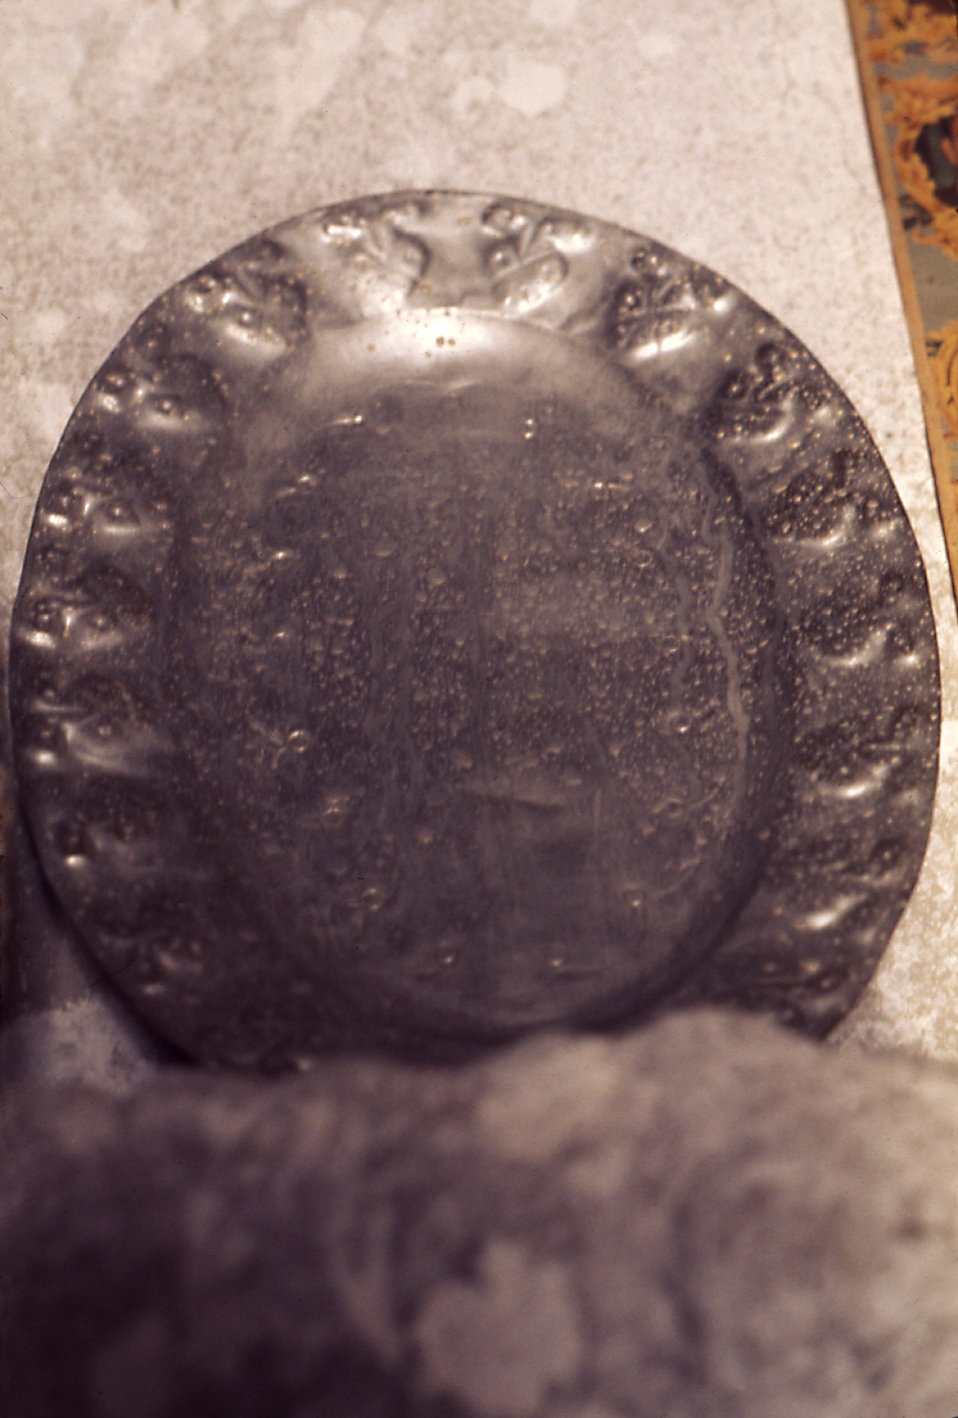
This 1977 image shows a plate streaked with dried malathion because cookware was sprayed in an effort to control mosquitoes.